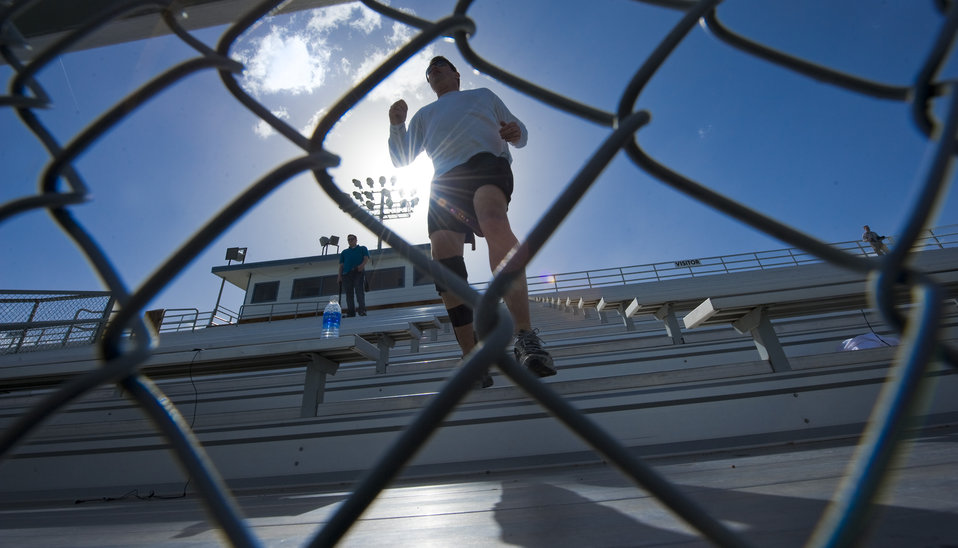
Warrior Games

The Air Force team run bleachers during their first training session leading up to the Warrior Games, May 9, 2011, at the Air Force Academy. The Warrior Games help elevate abilities through athletic competition for wounded, ill, and injured service members by providing a focal event to empower the incorporation of athletics into military wounded warrior programs, the games run through May 16 – May 21.